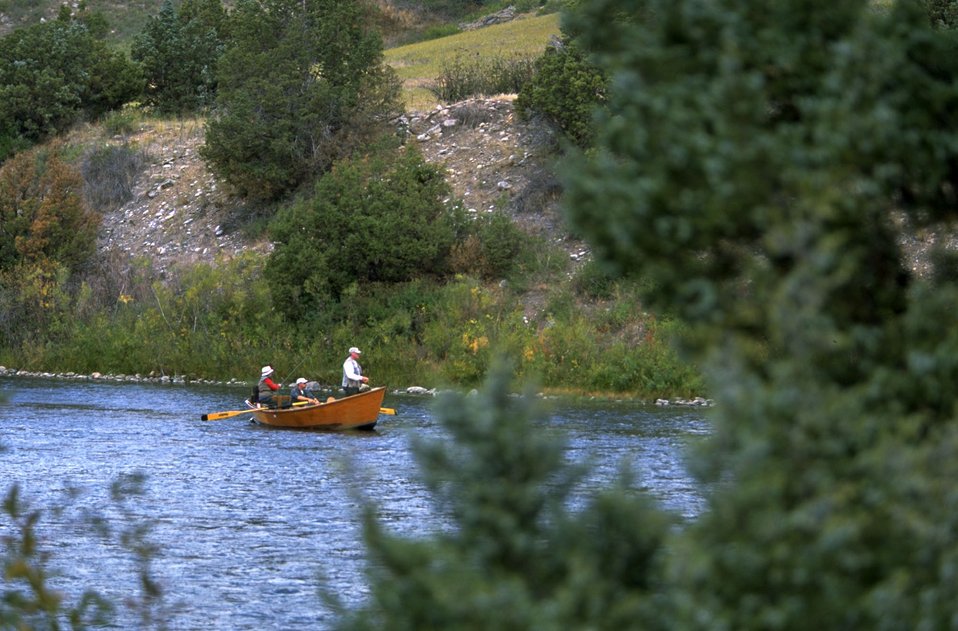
Float Fishing on the Madison River